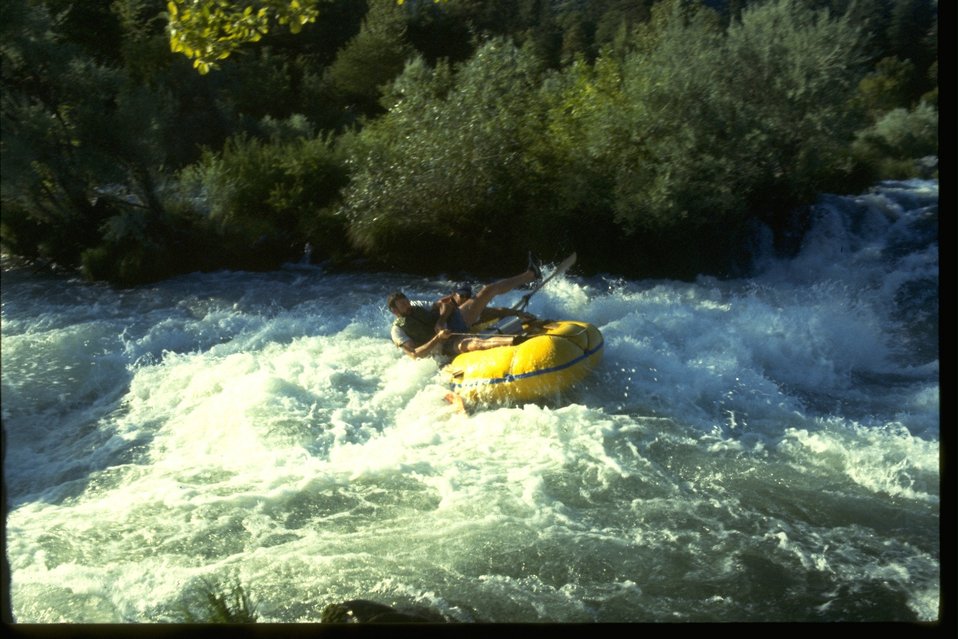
Whitewater rafting at Nugget Falls on the Rogue River.